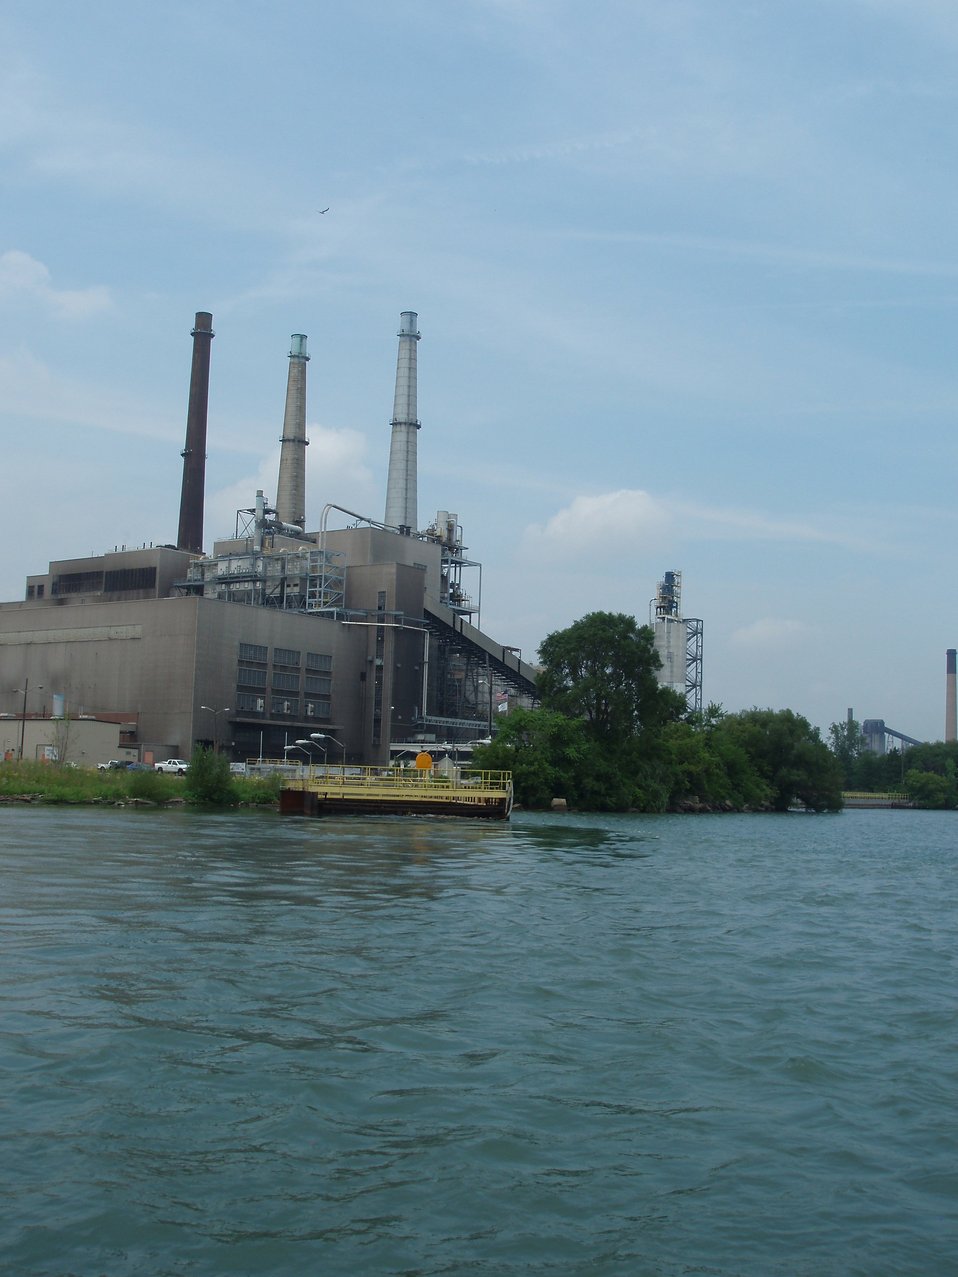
Industry along the Detroit River